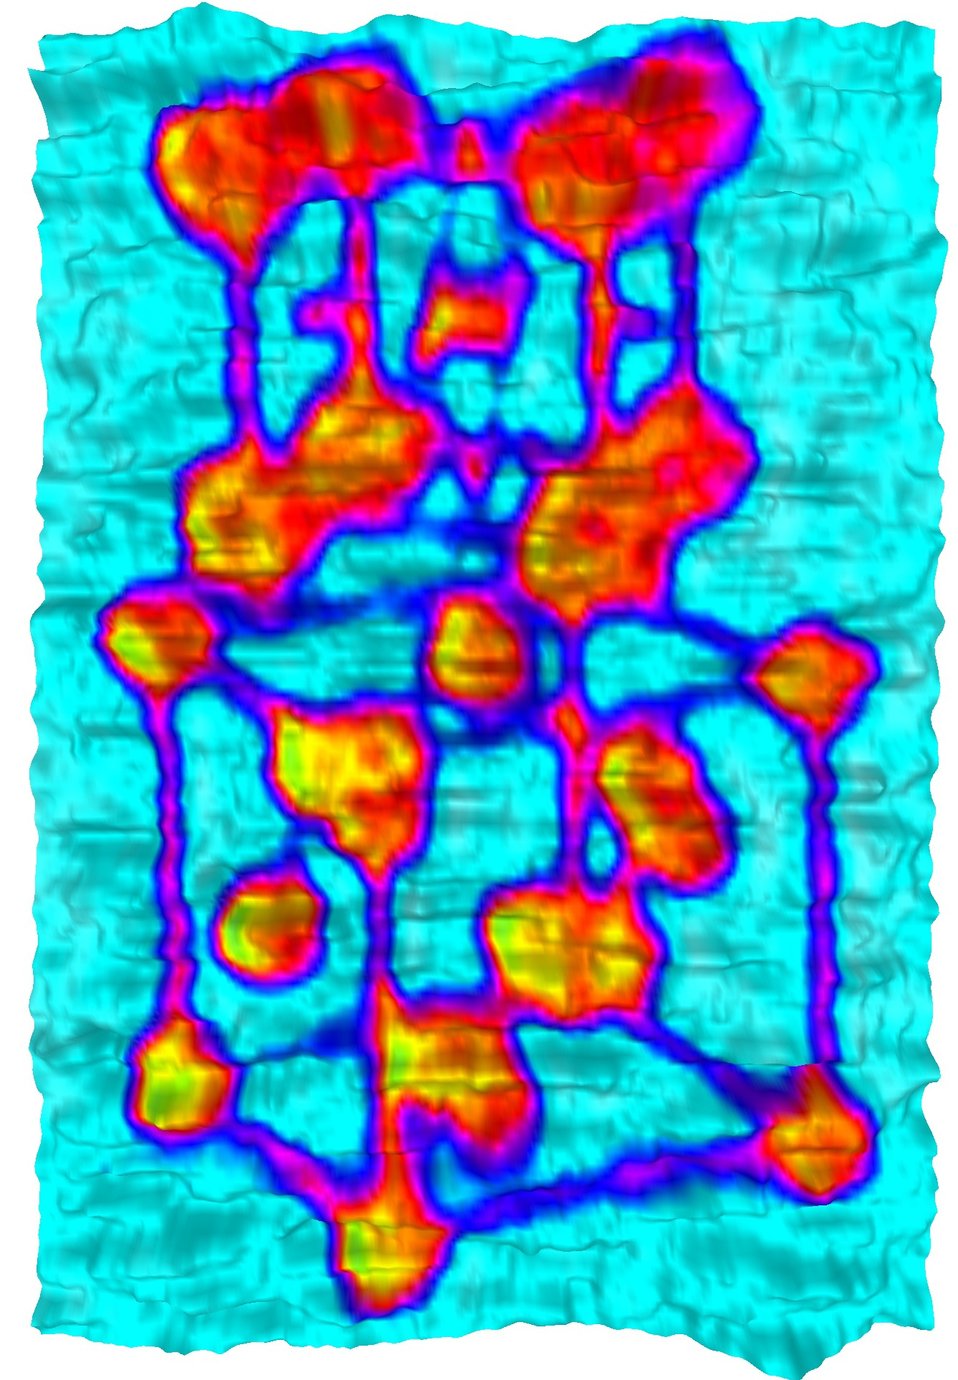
Nanoscale Vise